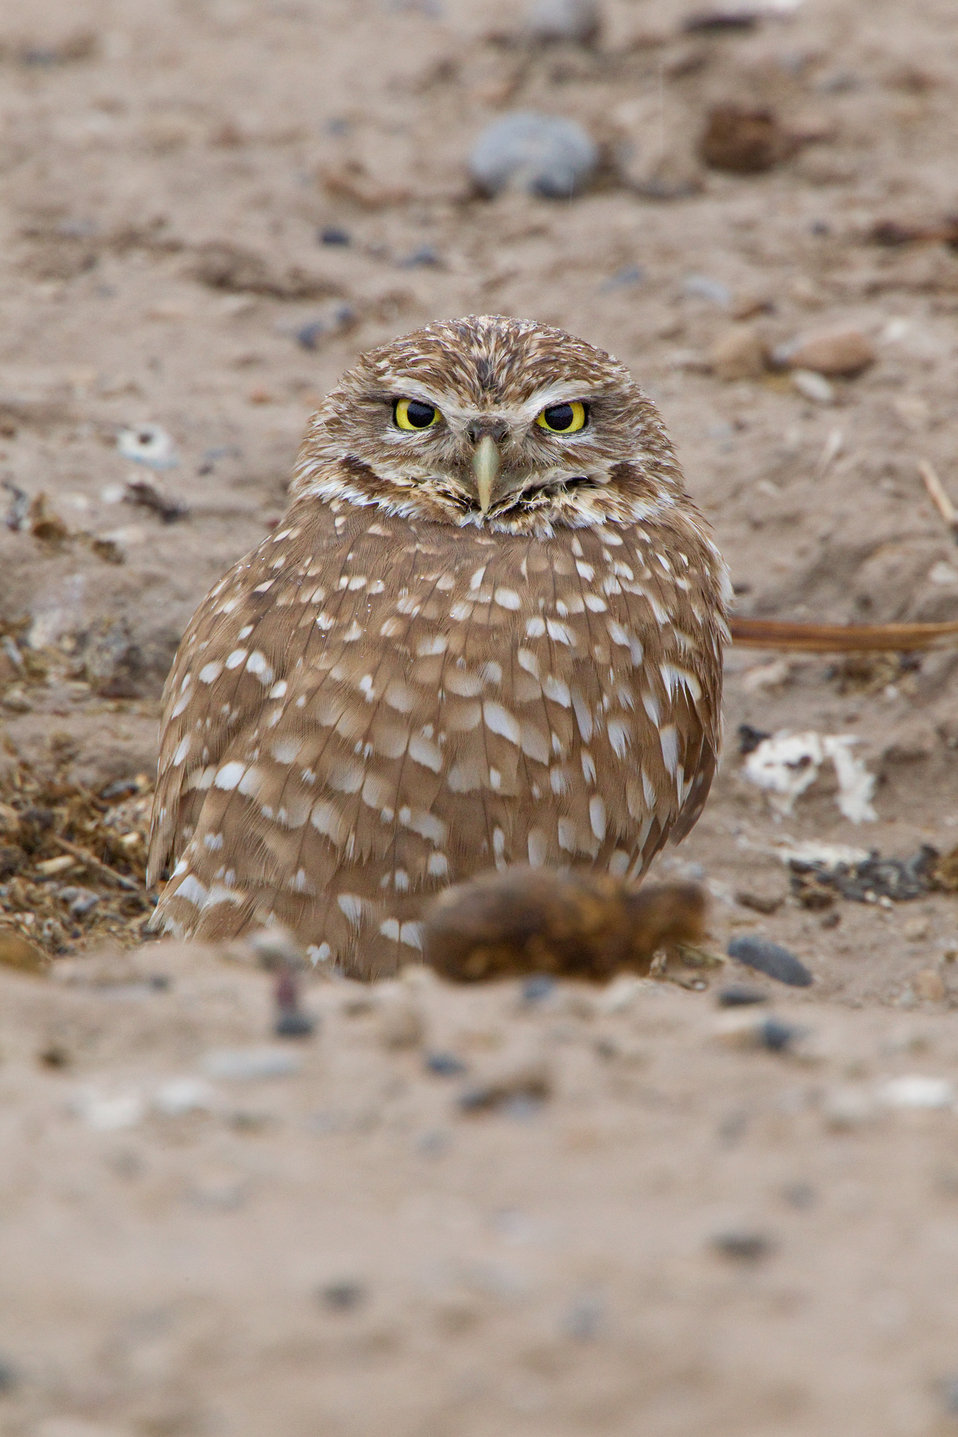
Male Burrowing Owl

Partners for Fish and Wildlife Program restoration project in Las Vegas, completed in partnership with Red Rock Audubon.